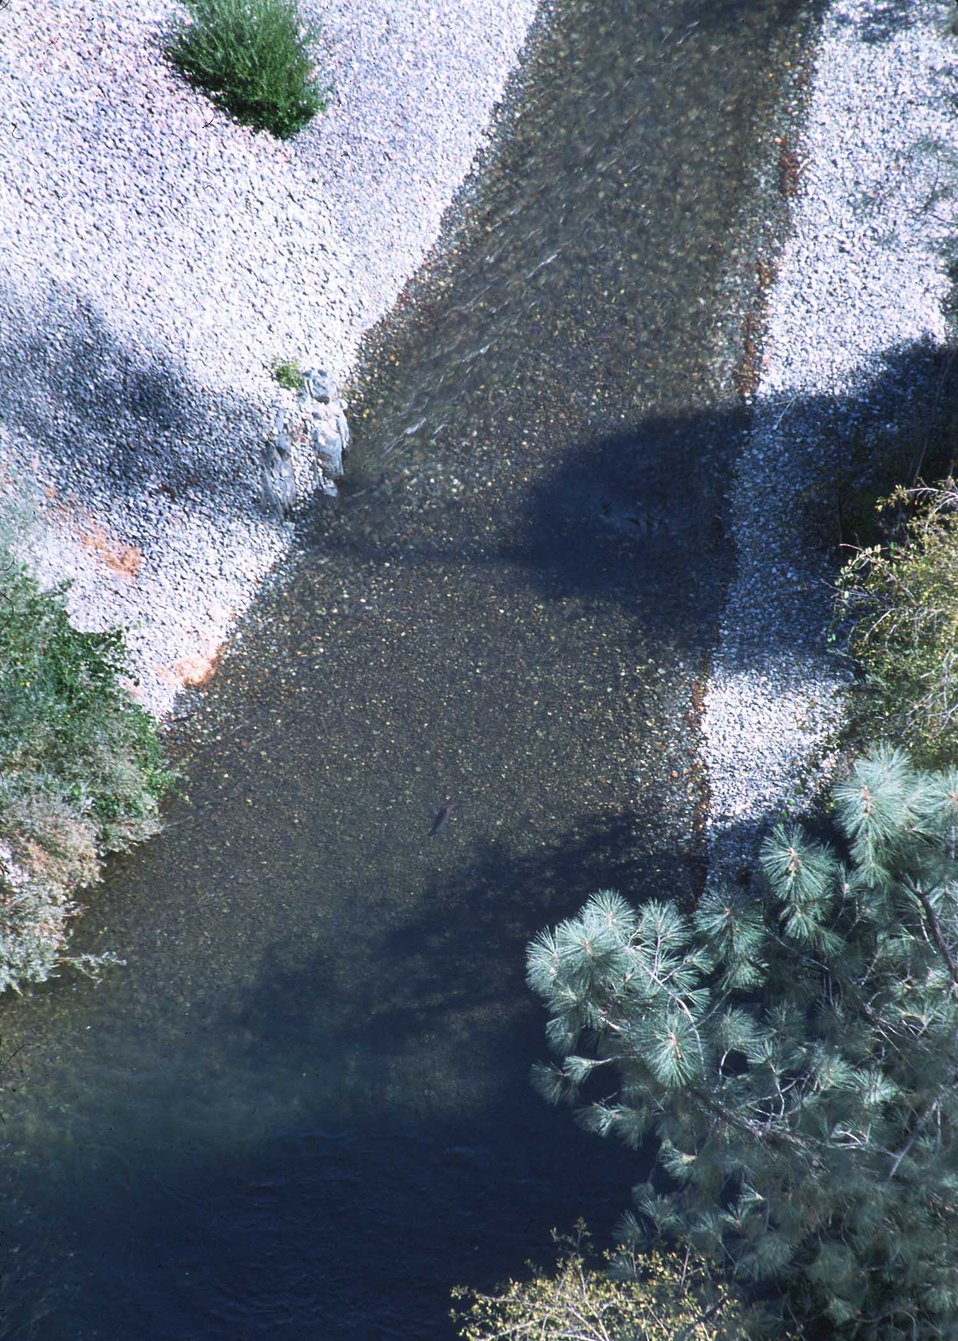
Gravel injection site below bridge.